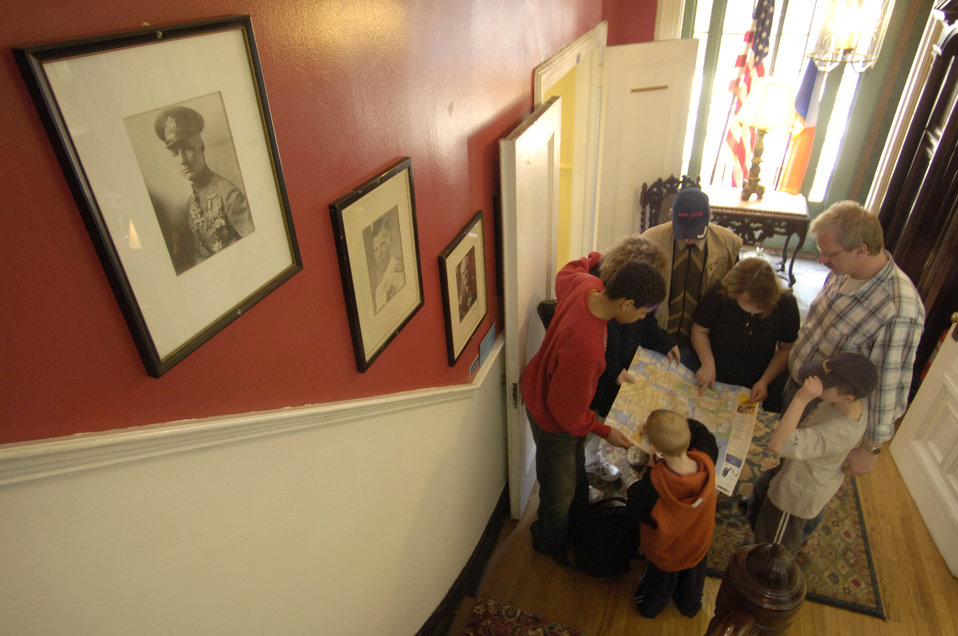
Manhattan's cheapest lodging for 'Those Who Serve'

Orienting themselves using a map that will take them to Manhattan's Ground Zero, Eva Graumann-Taylor and her 15-yr-old son, Erik, of Kensington, Maryland, play host on Tuesday, April 11, 2006 to five family members visiting from a town near Hamburg, Germany. The family stayed at the Soldiers', Sailors', Marines' and Airman's Club where the walls are adorned with original artwork that includes historical portraits of military leaders and American presidents. Mrs. Graumann-Taylor is the wife of retired Air Force Master Sgt Leon Taylor.